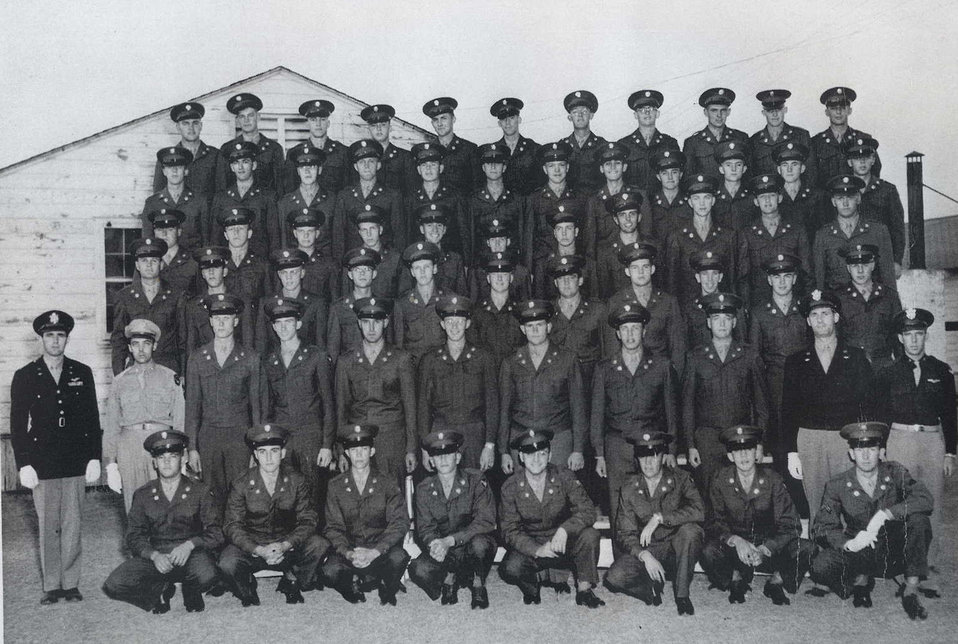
History project seeks basic-training photos